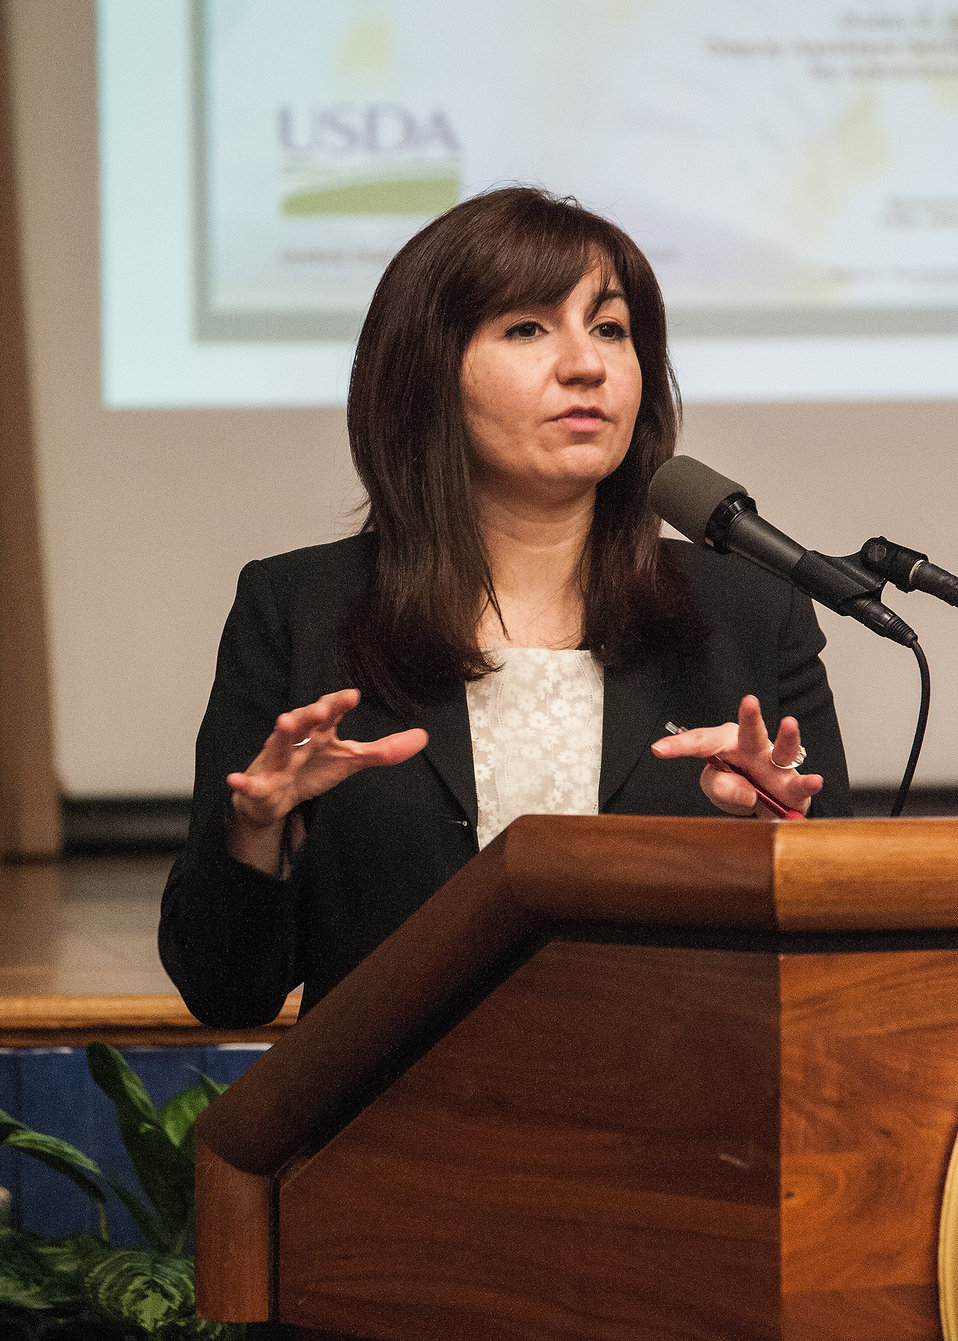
U.S. Office of Personnel Management (OPM) Office of Diversity and Inclusion Director Veronia Villalobos discusses OPM Government Wide Initiatives at the First Annual All Hands Special Emphasis Program Managers (SEPM) Meeting at the U.S. Department of Agriculture Jefferson Auditorium in Washington, D.C. on Wednesday, Mar. 13, 2013.